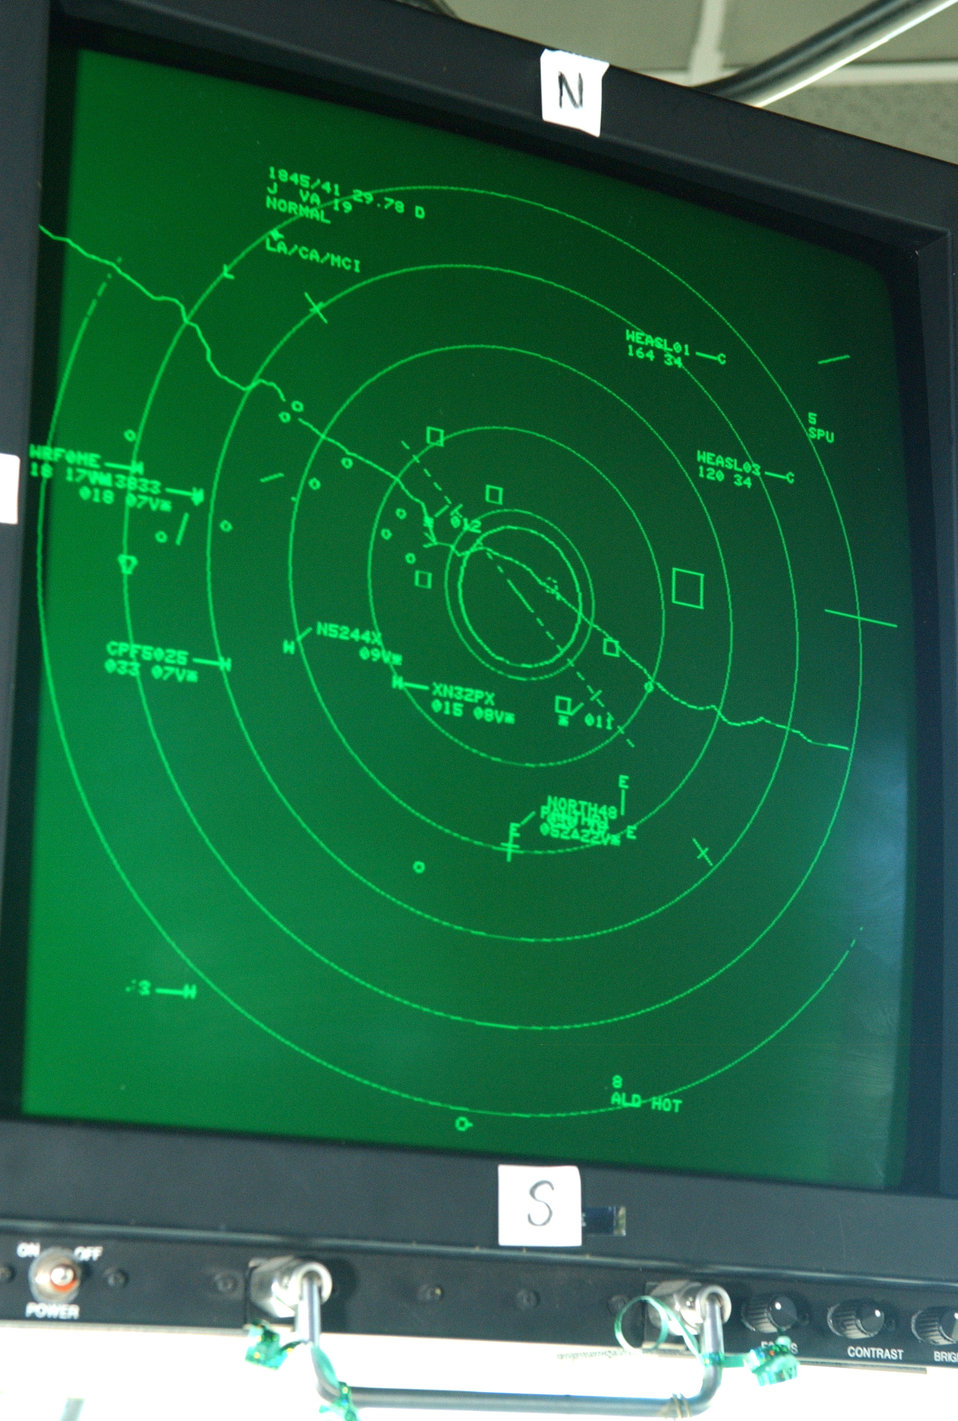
Cleared for takeoff

A radar screen located in the flight tower keeps track of in-flight aircraft at Eielson Air Force Base, Alaska, May 23. The radar in Eielson's control tower is linked off of a radar screen located at an airport in nearby Fairbanks.